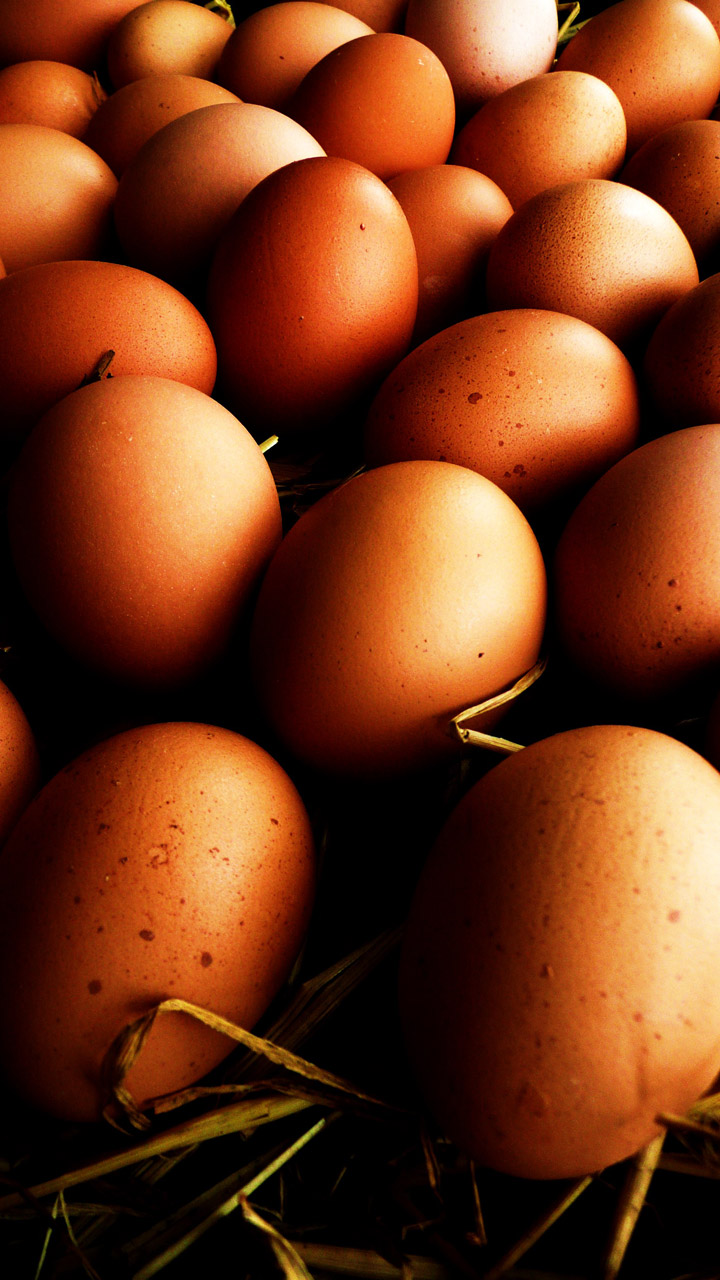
Eggs in the straw.